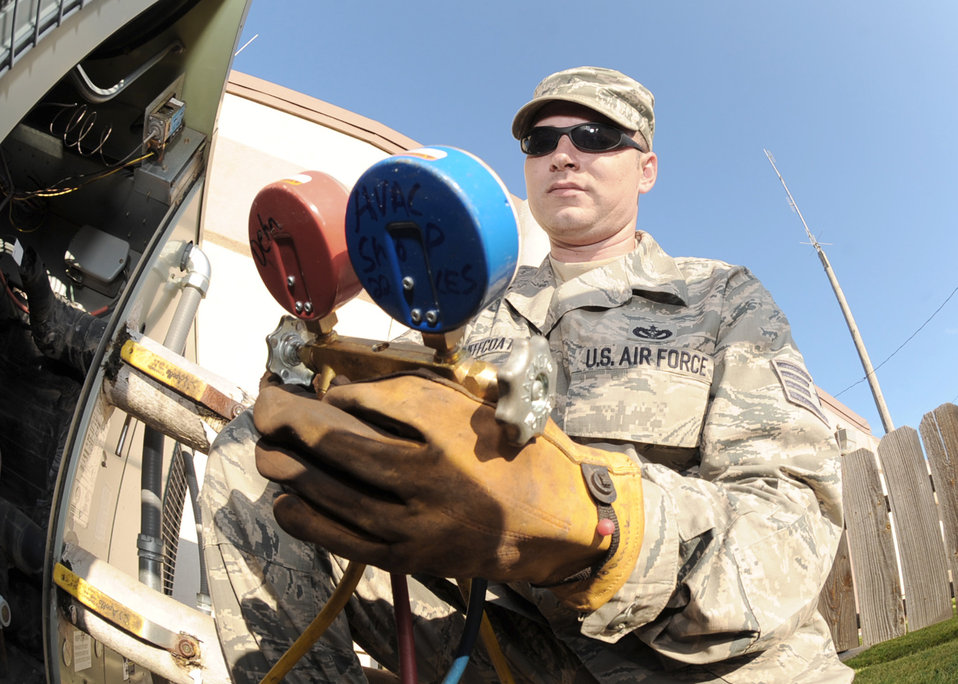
SSgt Chris Jeffcoat

Staff Sgt. Christopher Jeffcoat reads a meter Sept. 17, 2010, at McConnell Air Force Base, Kan. Sergeant Jeffcoat improved his Air Force fitness test score from 57 points to 83 points in two months. With the help of his first sergeant and his coworkers, he established a healthier lifestyle. Sergeant Jeffcoat is a 22nd Civil Engineer Squadron heating ventilation and cooling craftsman.